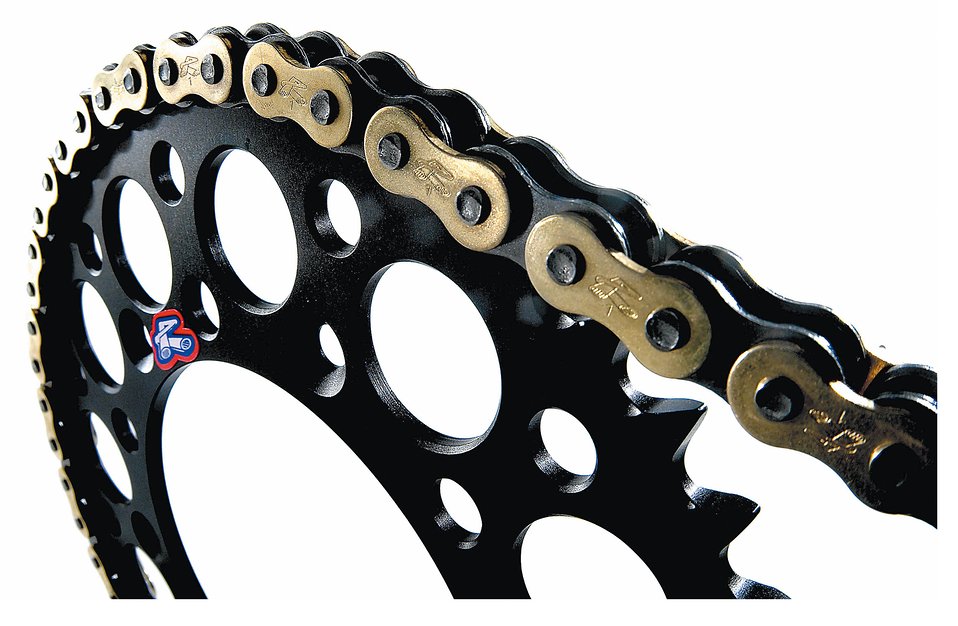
Renthal R1 Chain for Motocross bikes. This is a non oring chain designed spefically for motocross use.